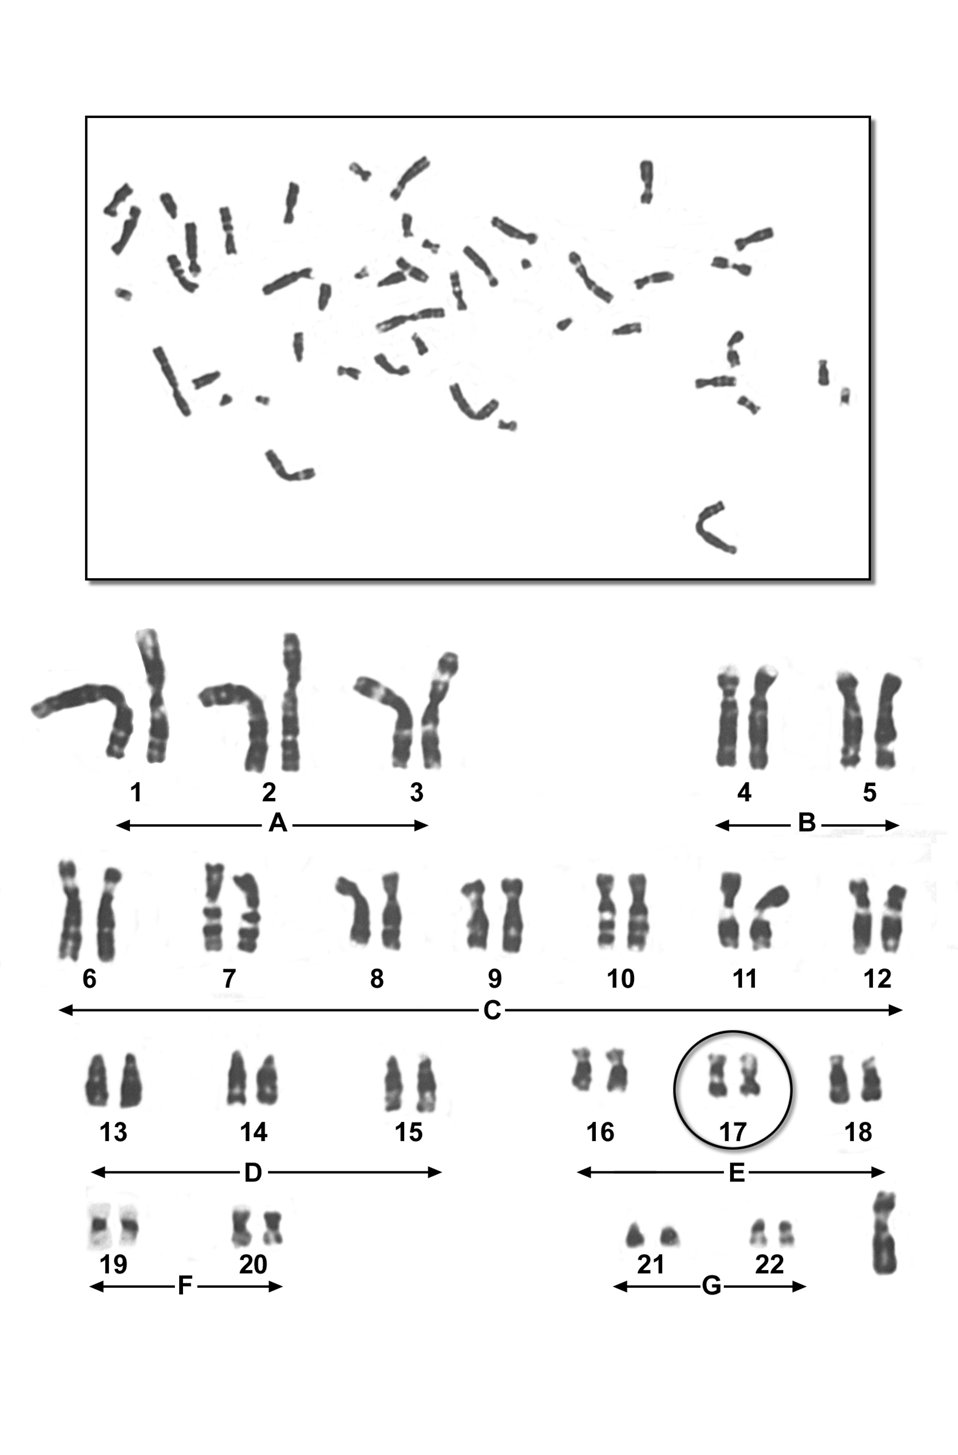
This photomicrographic collage depicts the karyotype that would represent the chromosomal configuration seen in a human being with what is known as a chromosome 17 inversion. A chromosomal inversion occurs when a chromosome breaks in two places, and the piece of genetic material broken away is flipped around and reinserted into the same chromosome. Either the broken section can include the centromere, which is known as pericentric, or not include the centromere, which is known as paracentric.